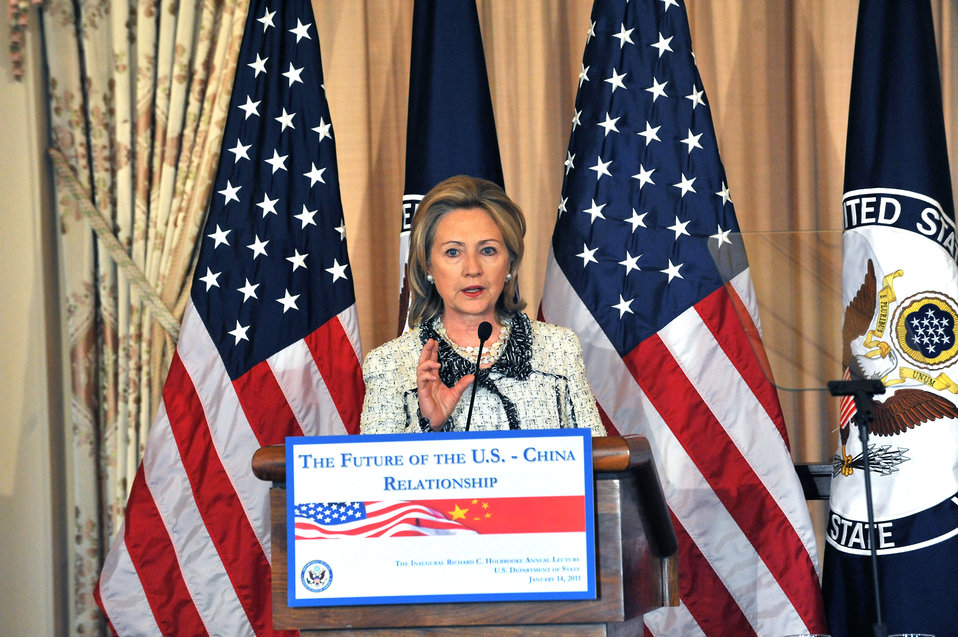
Secretary Clinton Delivers Remarks for the Inaugural Richard C. Holbrooke Lecture

U.S. Secretary of State Hillary Rodham Clinton delivers remarks for the Inaugural Richard C. Holbrooke Lecture: Broad Vision of U.S.- China Relations in the 21st Century, in the Benjamin Franklin Room in the U.S. Department of State in Washington, D.C., on January 14, 2011.